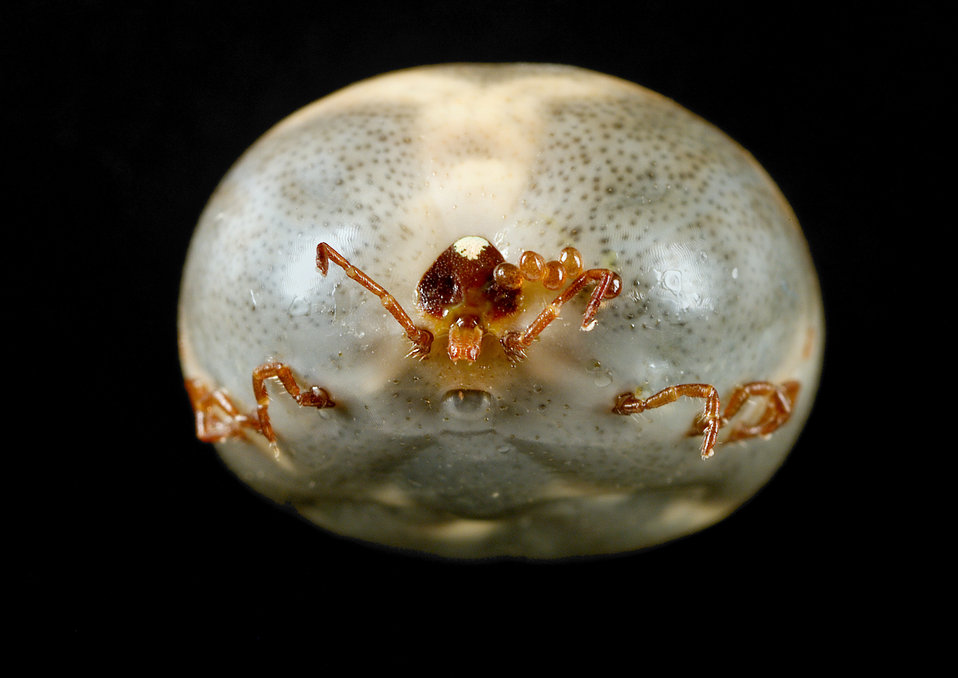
This photograph depicts an anterior, or head-on view of an engorged female "lone star tick", Amblyomma americanum. Note a number of round, amber-colored eggs that after just having been laid, became attached to the anterior abdomen adjacent to the female's scutum. To view additional images related to this tick specie, see PHIL 4407, 8676 through 8680, and 8682 through 8685.